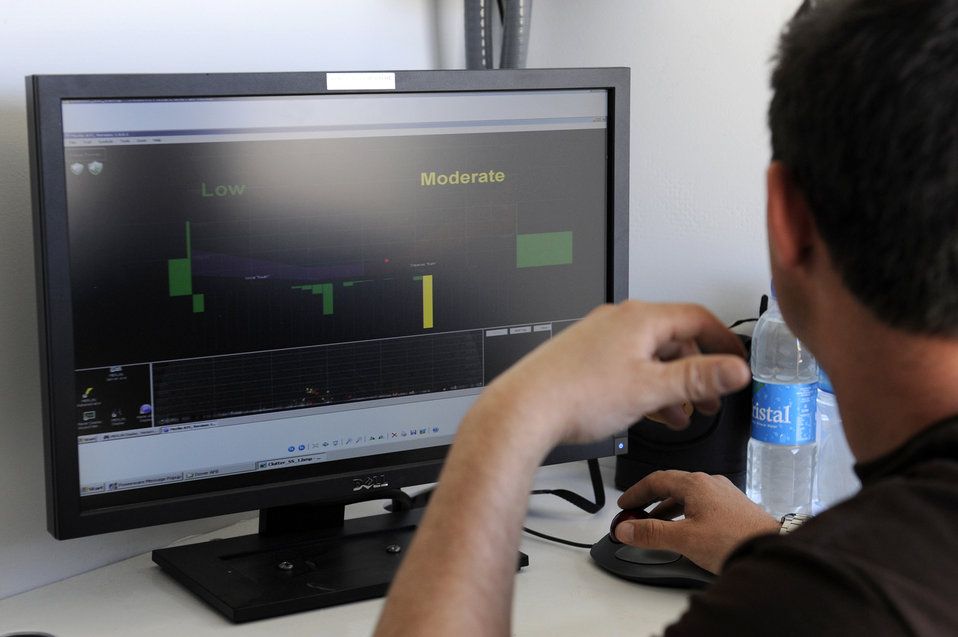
Monitoring the airfield under the watchful eye of Merlin

Mike Bierman installs a Merlin bird radar system software on a computer May 29, 2010, at Bagram Airfield, Afghanistan. Mr. Bierman is a contractor with DeTech Incorporated.